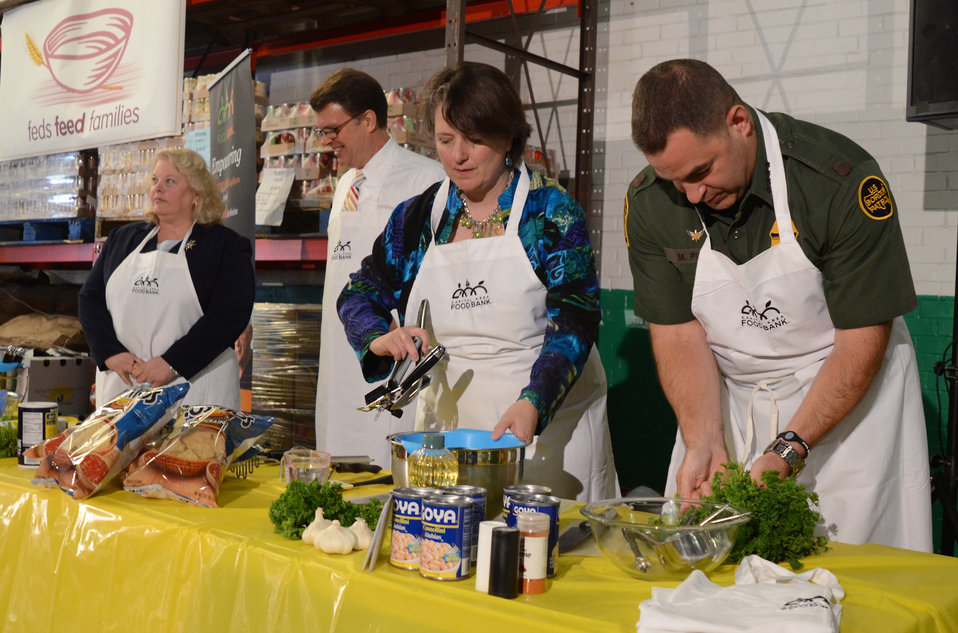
Left to right, Donna Seymour, Principal Director to the Deputy Assistant Secretary of Defense for Civilian Personnel Policy, John Berry, U.S. Office of Personnel Management (OPM) Director, Agriculture Deputy Secretary Kathleen Merrigan and Michael J. Fisher, Chief, U.S. Border Patrol prepares food at the Feds Feed Families Kick-Off event at the Capital Food Bank in Washington, D.C., on Monday, June 11, 2012.